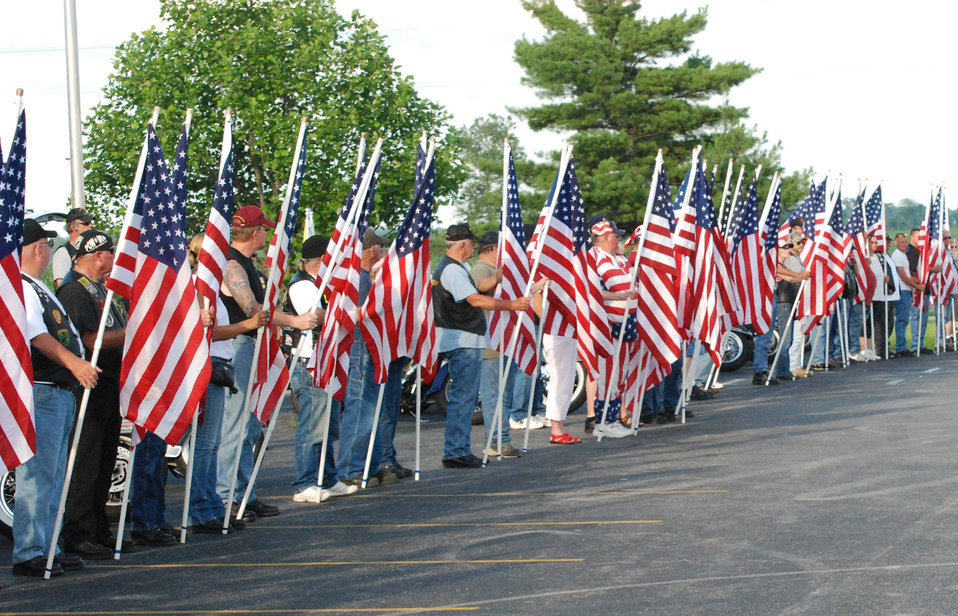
Tech Sgt Roy Prater

Veterans display American flags to honor Tech. Sgt. Roy DeWitt Prater June 19, 2010, in Columbia City, Ind. Sergeant Prater was conducting a rescue mission when his helicopter was shot down over South Vietnam in 1972.